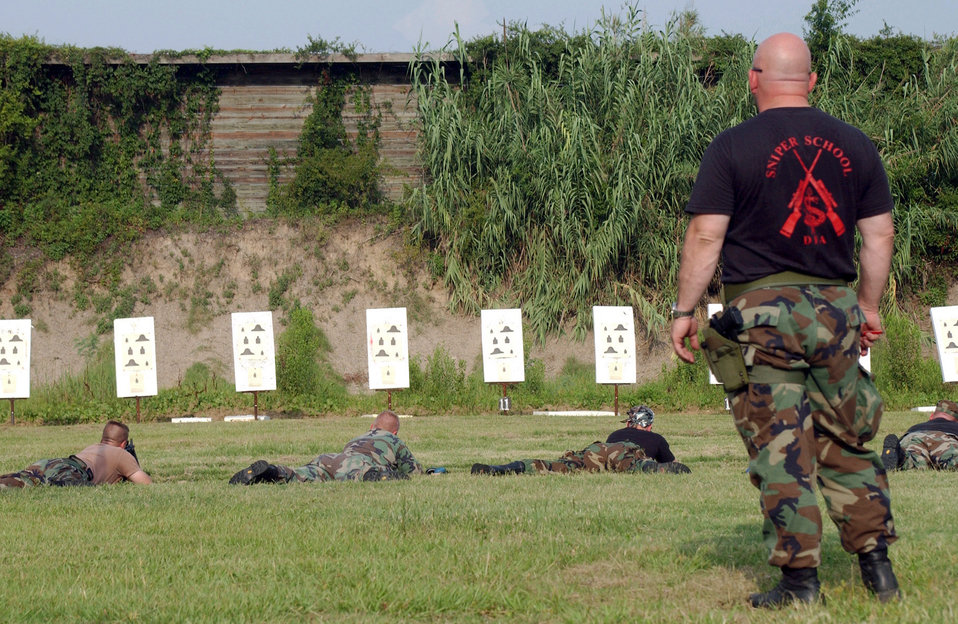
Aim and qualify

SAVANNAH, Ga. -- Staff Sgt. Mark Thompson oversees M-16 rifle qualification during annual training here July 15. Sergeant Thompson is a member of the West Virginia Air National Guard's 130th Airlift Wing.